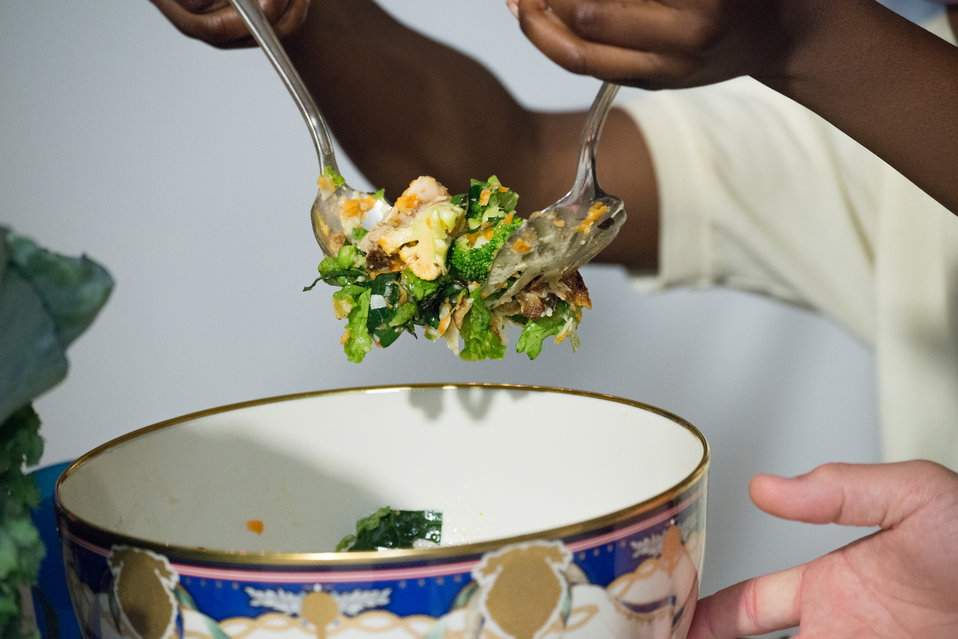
Jerry Womack has a second helping of a White House home grown garden salad while having lunch with First Lady Michelle Obama in the White House State Dining Room in Washington, D.C. on Thursday, Jun. 12, 2014. Jerry is one of the Washington, D.C. students who helped plant the White House Kitchen Garden in the spring, and now enjoys the summer harvest of the crop.